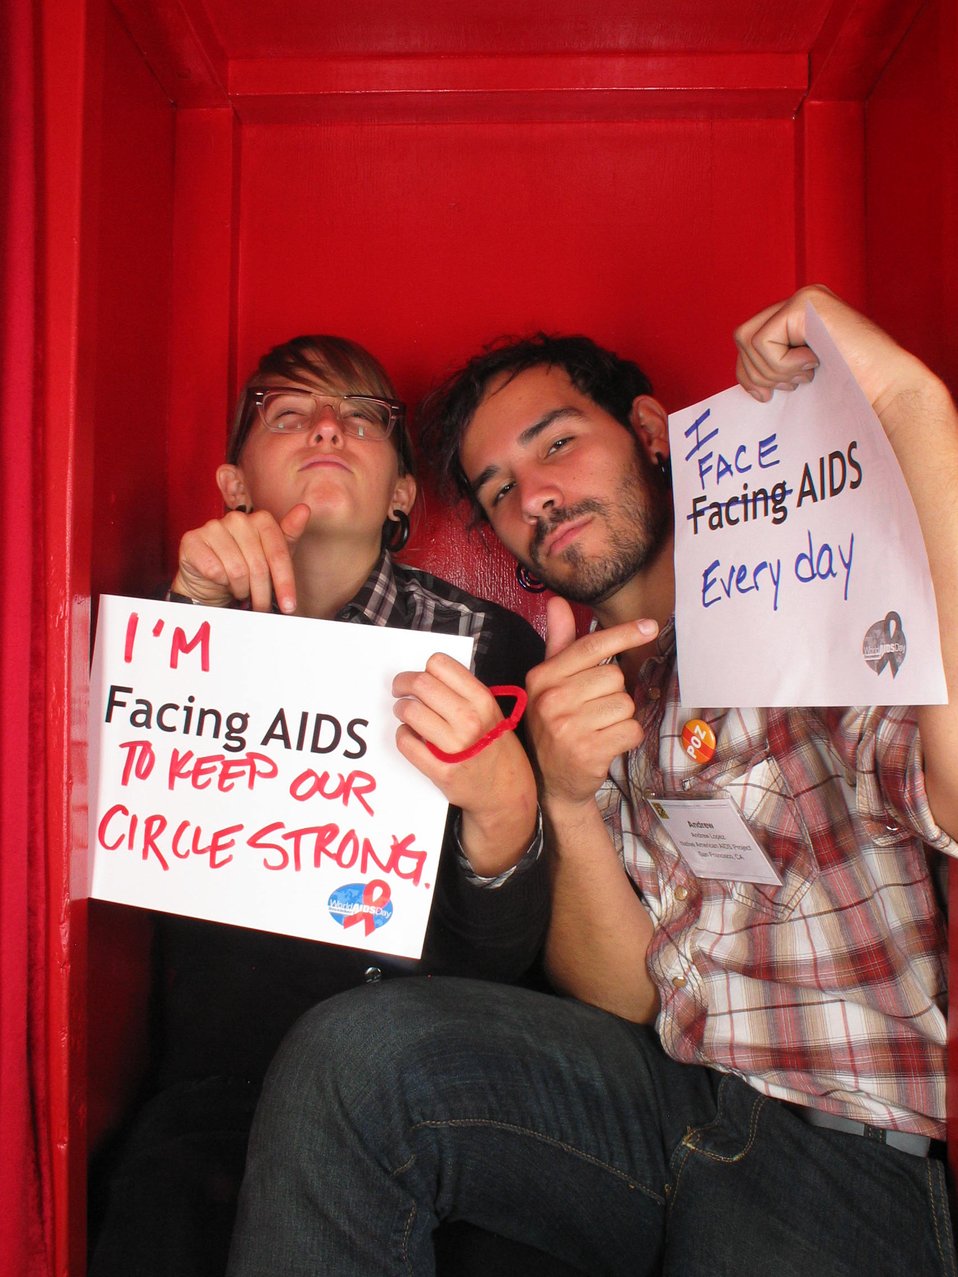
I am Facing AIDS to keep our circle strong. I face AIDS everyday.